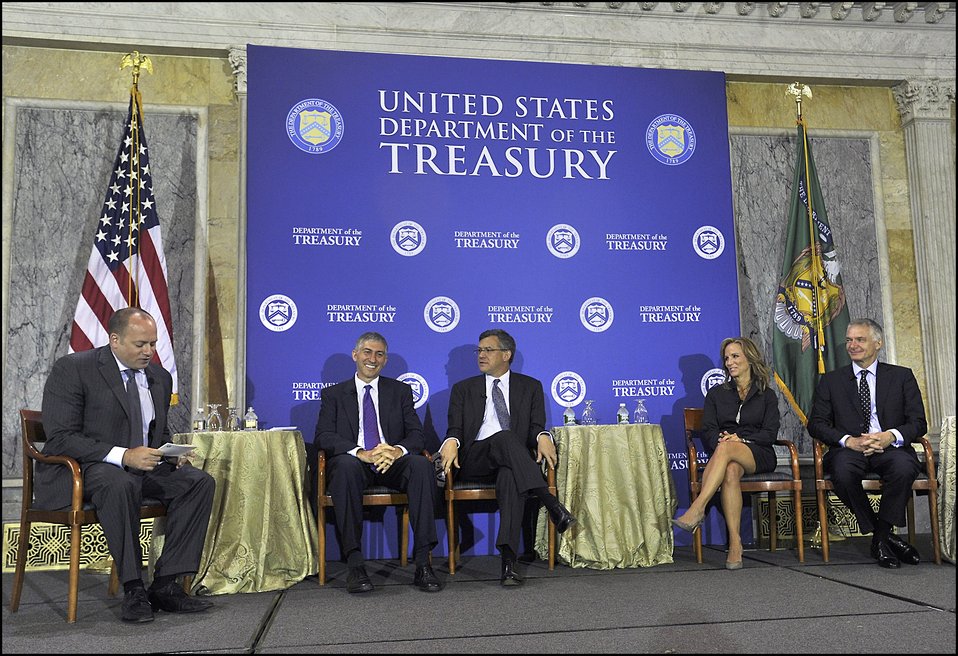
Ten Years Later: Progress and Challenges in Combating Terrorist Financing Since 9/11, 09/08/11

Assistant Secretary for Terrorist Financing Daniel Glaser moderated panel two, titled, 'Combating Terrorist Financing: Progress, Challenges and the Way Forward.' Panelists included (from left to right) Stuart Levey, Senior Fellow, Council on Foreign Relations, and former Under Secretary of the Treasury for Terrorism and Financial Intelligence; Daniel Benjamin, Coordinator for Counterterroism, U.S. Department of State; Frances Fragos Townsend, Senior Vice President, MacAndrews and Forbes Holdings, and former Assistant to the President for Homeland Security and Counterterrorism; and Richard Barrett, Coordinator, United Nations Sanctions Implementation Monitoring Team.